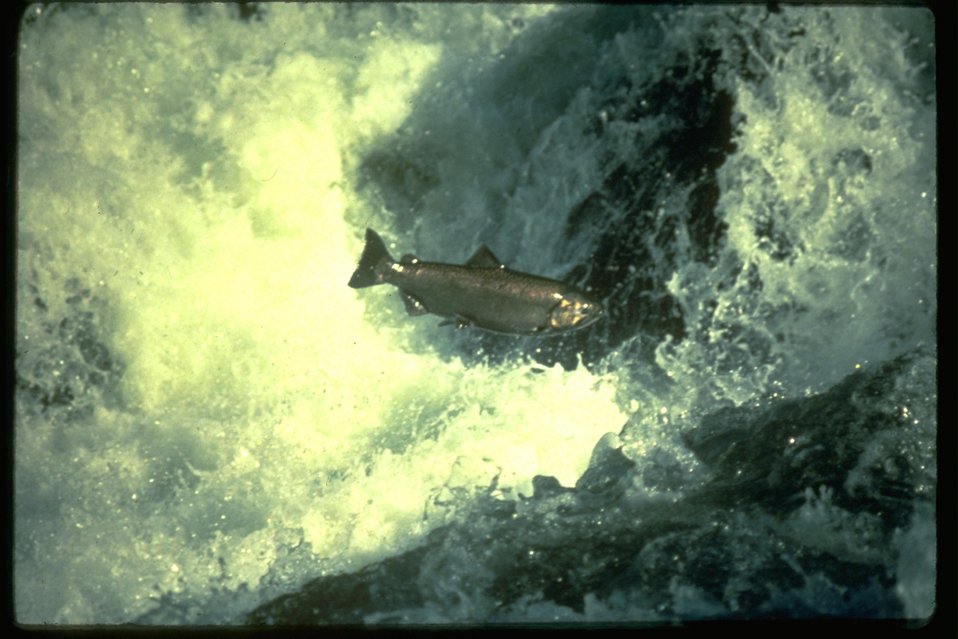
Salmon jumping Rainie Falls on the Rogue River.